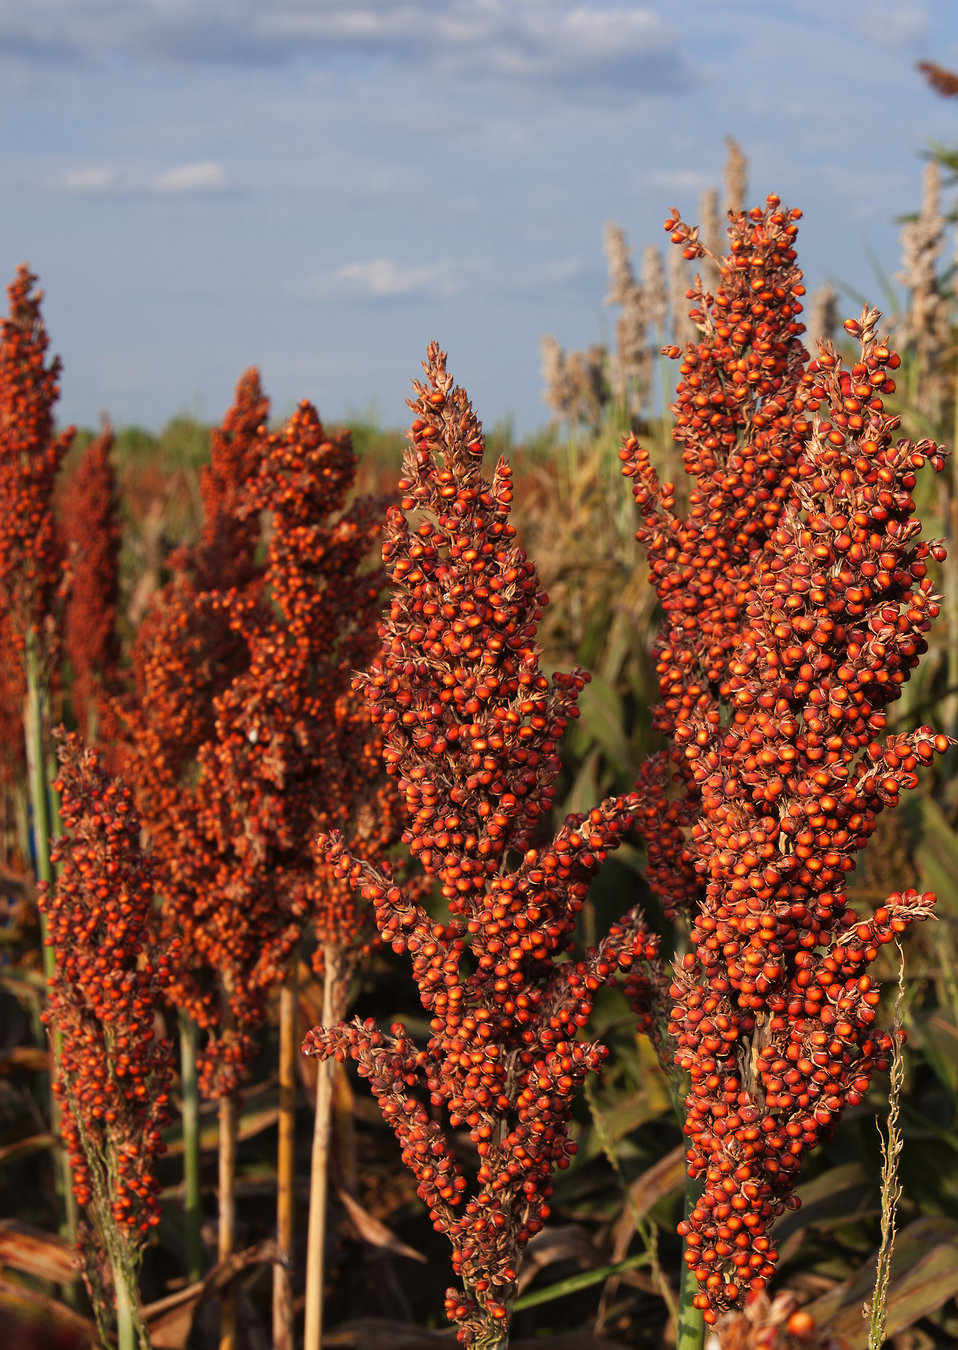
A grain mold-resistant sorghum line with bright red seeds grows in a field on Dec. 6, 2002.